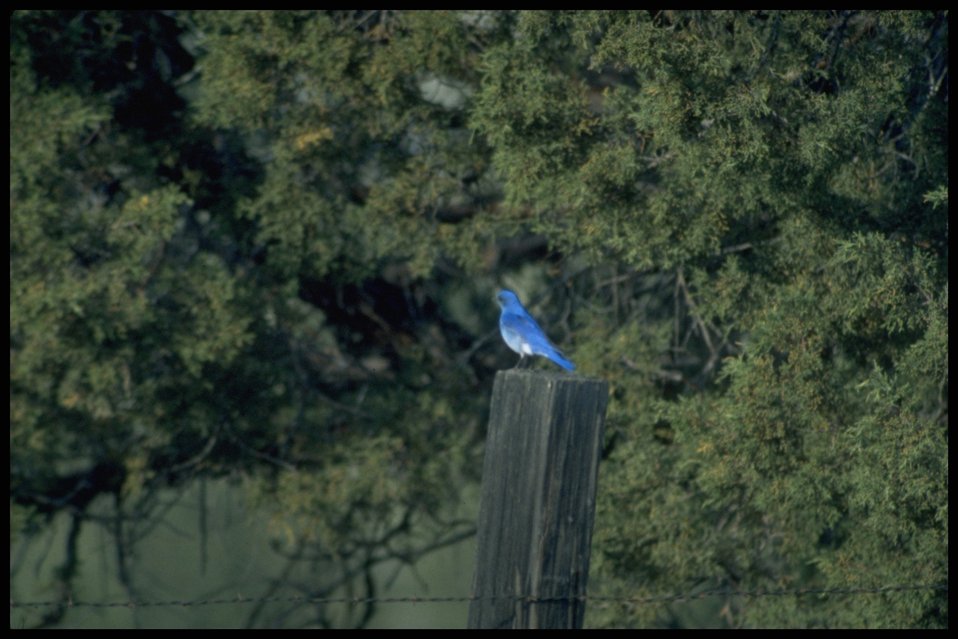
Far shot of Blue Bird perched on fence post. Lakeview District.